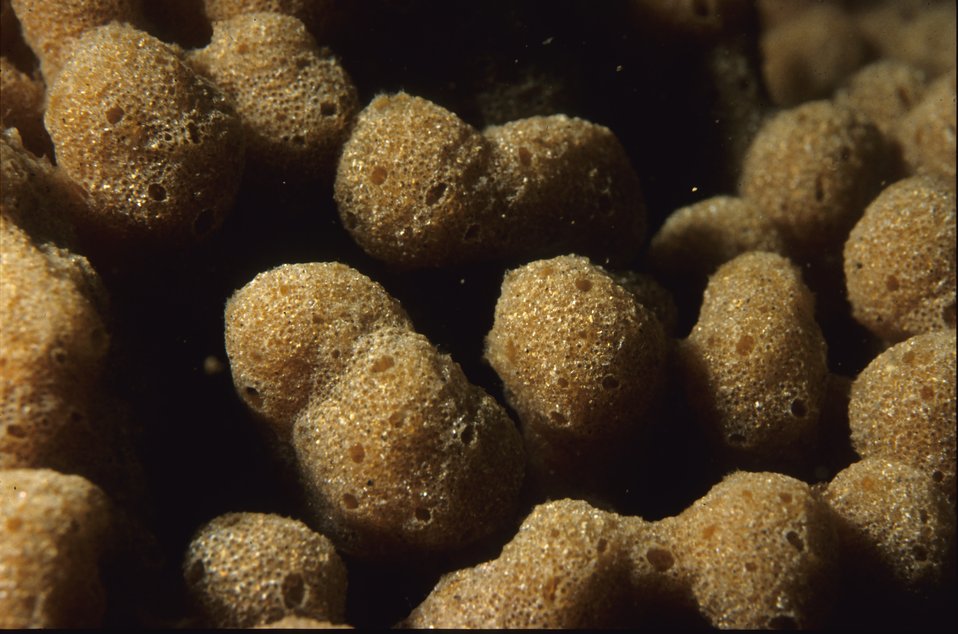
One Tree Reef. Sponge.